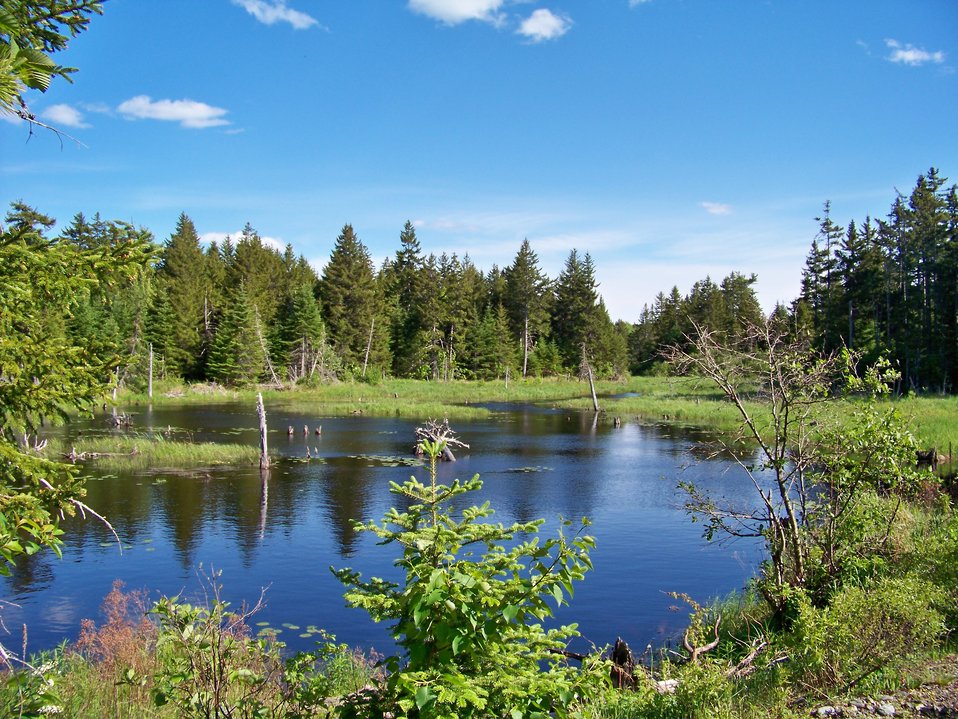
Moosehorn National Wildlife Refuge.